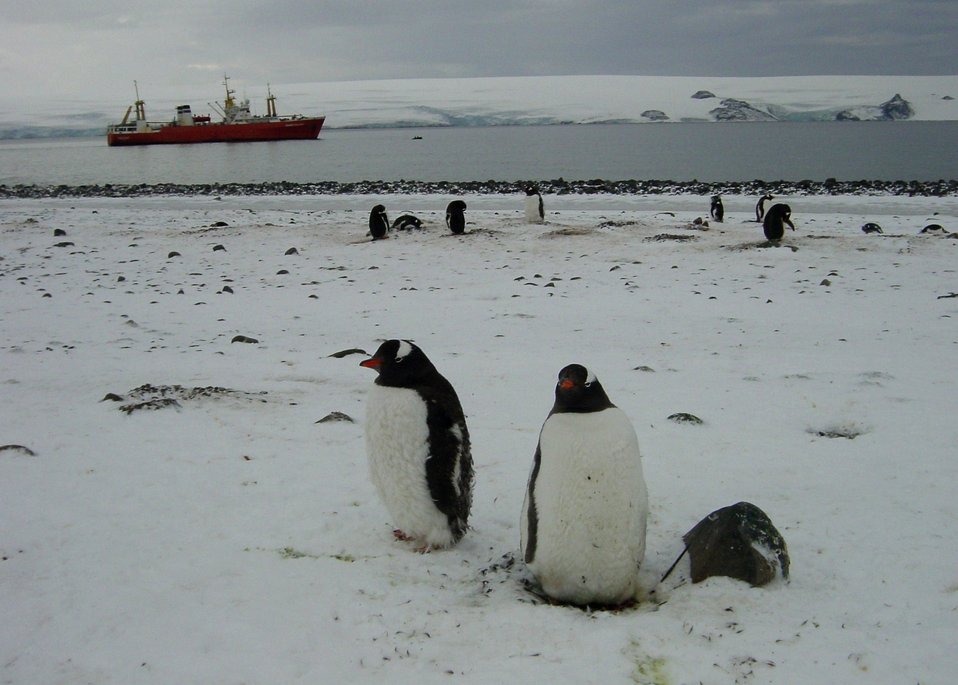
Gentoo penguins